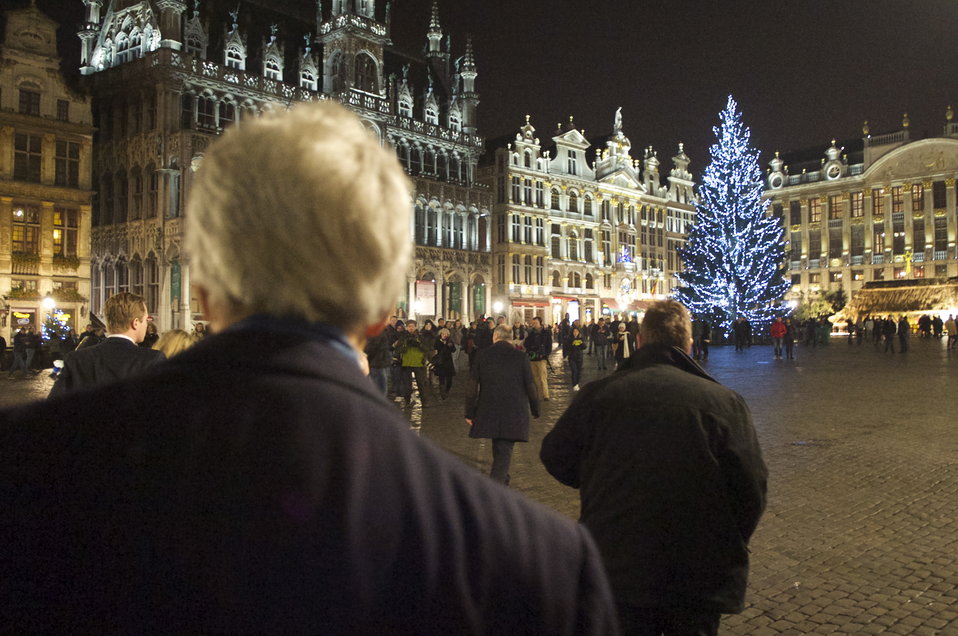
Secretary Kerry Visits the Grand Place

U.S. Secretary of State John Kerry views a Christmas-bedecked Grand Place after NATO Ministerial meetings in Brussels, Belgium, on December 3, 2013.